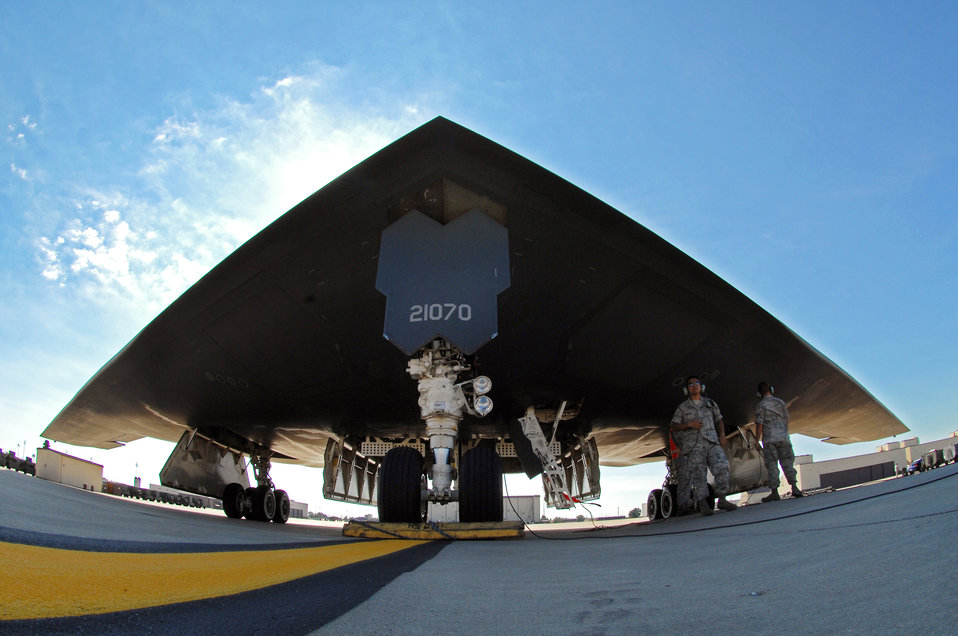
Shady business

Crew chiefs with the 509th Aircraft Maintenance Squadron prepare a B-2 Spirit for flight Aug. 24 at Whiteman Air Force Base, Mo. Twenty B-2s are assigned to the 509th Bomb Wing. The B-2's primary mission is to attack time-critical targets early in a conflict to minimize an enemy's warfighting potential.